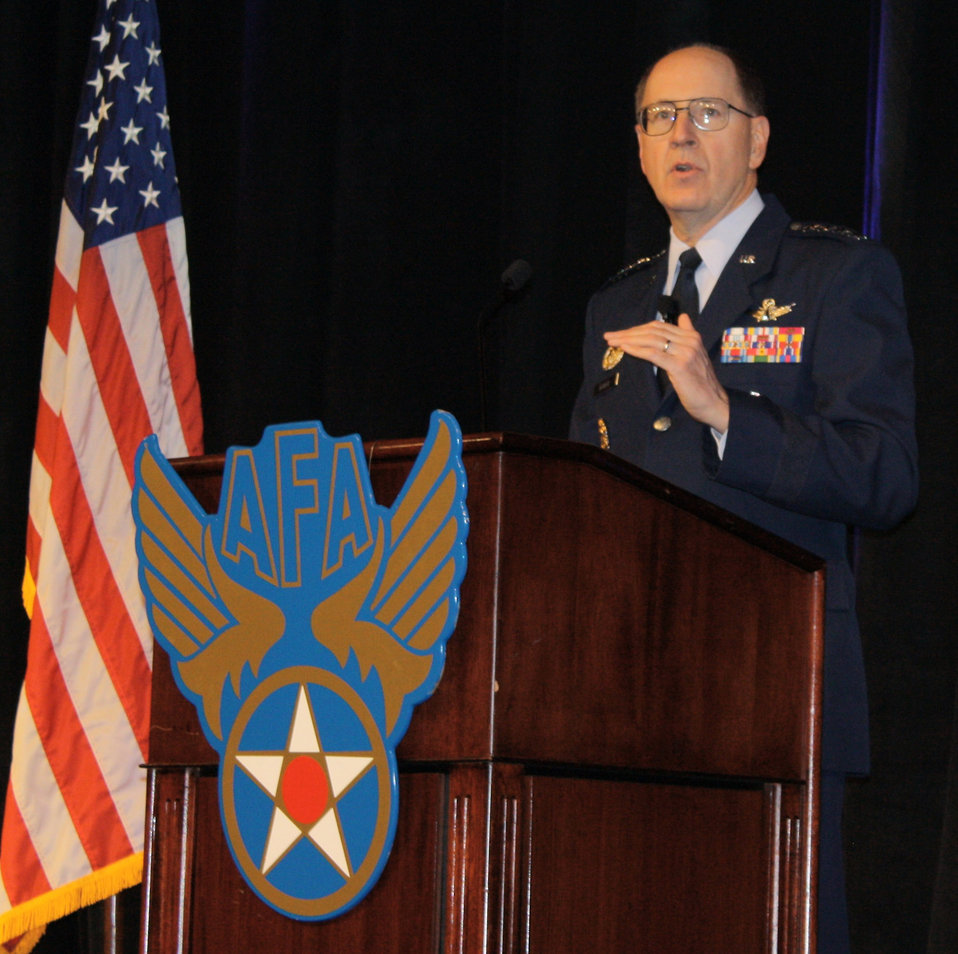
AFSPC ommander speaks on changing nature of warfare

Gen. C. Robert Kehler, commander of Air Force Space Command, attended the Air Force Association's Air Warfare Symposium in Orlando Feb. 27 and spoke on the changing nature of warfare in the 21st century and the measures that must be taken to respond to those changes.